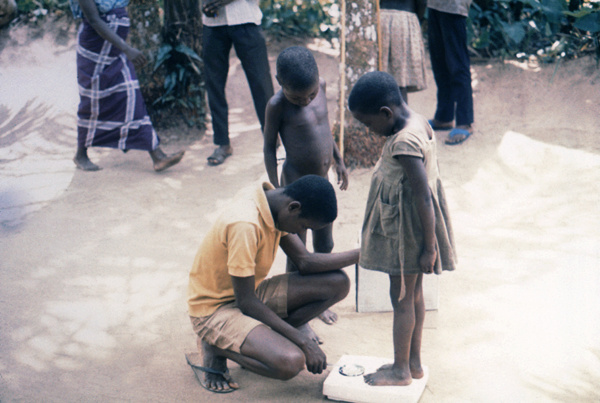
This late 1960s photograph shows children being weighed, using bathroom scales, at a Nigerian relief camp where health officials could assess the needs of the local villagers. Later, hanging Psalter scales were delivered in order to facilitate the acquisition of more accurate weight measurements.